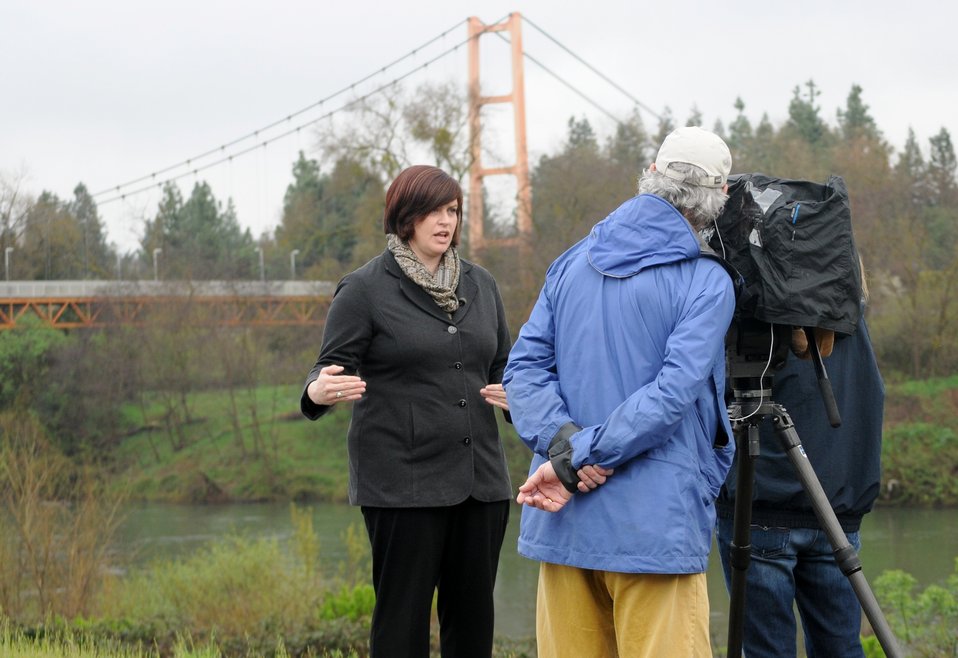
Alicia Kirchner describes Sacramento flood risk for PBS documentary

SACRAMENTO, Calif. (March 18, 2011) – U.S. Army Corps of Engineers Sacramento District’s chief of planning Alicia Kirchner is interviewed on Sacramento’s flood history by the Water Education Foundation here March 14. Kirchner discussed past and ongoing risk of flooding in the Sacramento area for a PBS documentary video scheduled for release in May.

“Sacramento is one of America’s most-at-risk cities for flood,” Kirchner said. “The Corps is working with the state of California and local agencies to improve the levees here, but living with levees will always come with risk.”